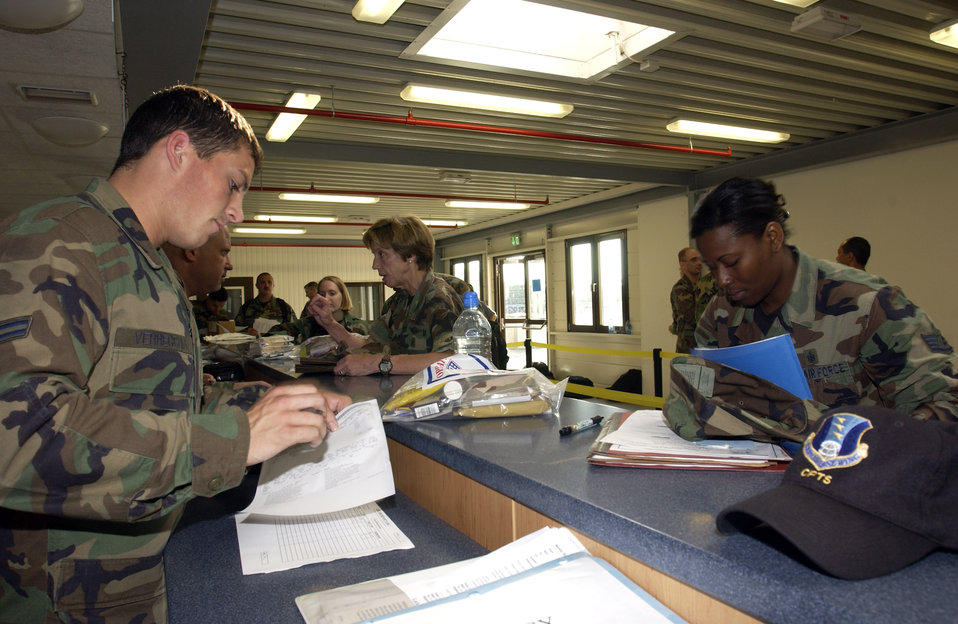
Assisting Americans

Airmen from the 435th Medical Group process the mobility line at Ramstein Air Base, Germany, on July 20. The Airmen are assisting humanitarian efforts for Americans who have left Lebanon for Cyprus.